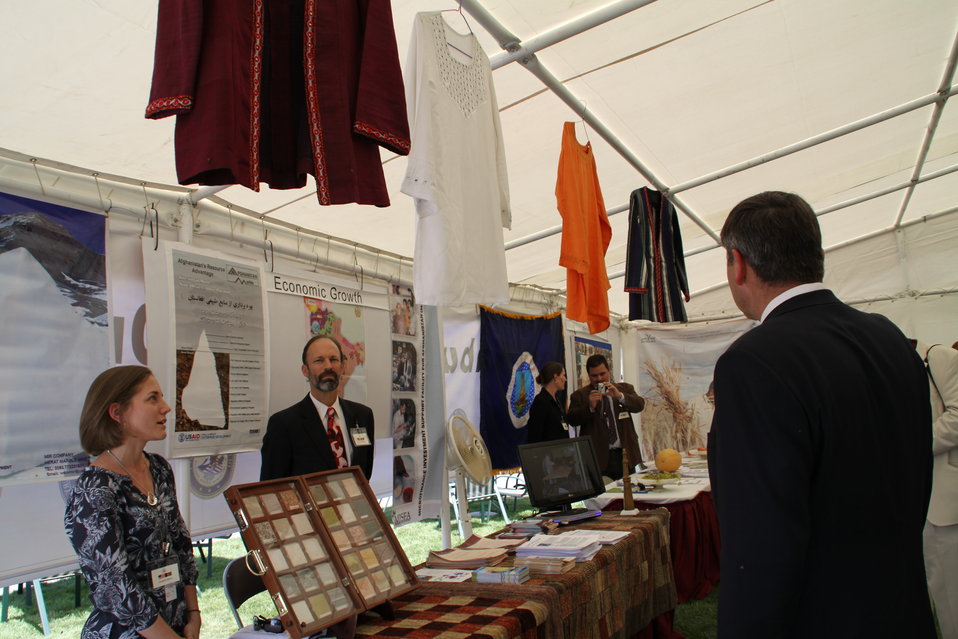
Kabul Official July 4th Celebration